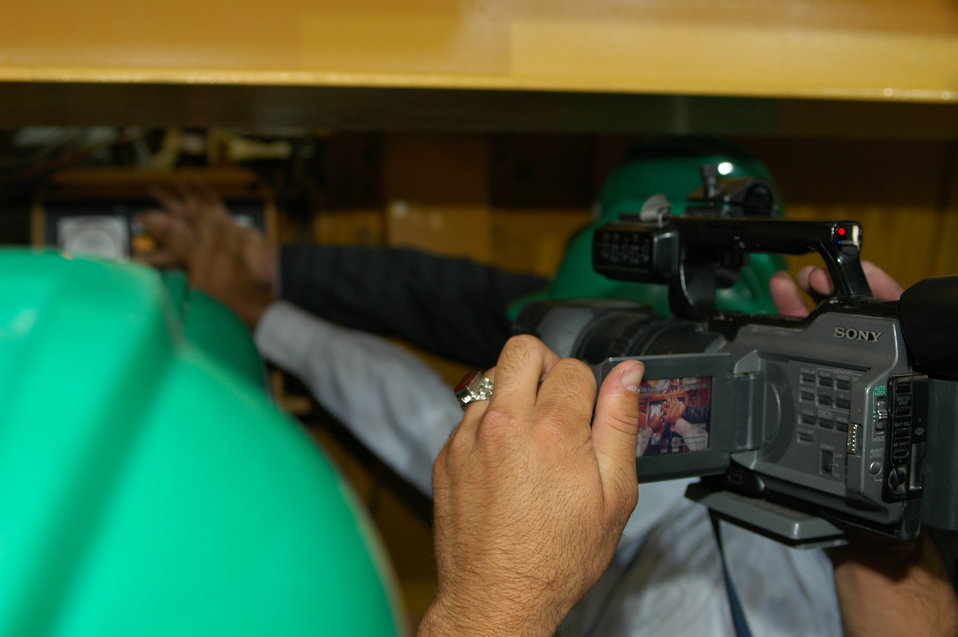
105 MW Tarakhil Power Plant Handover